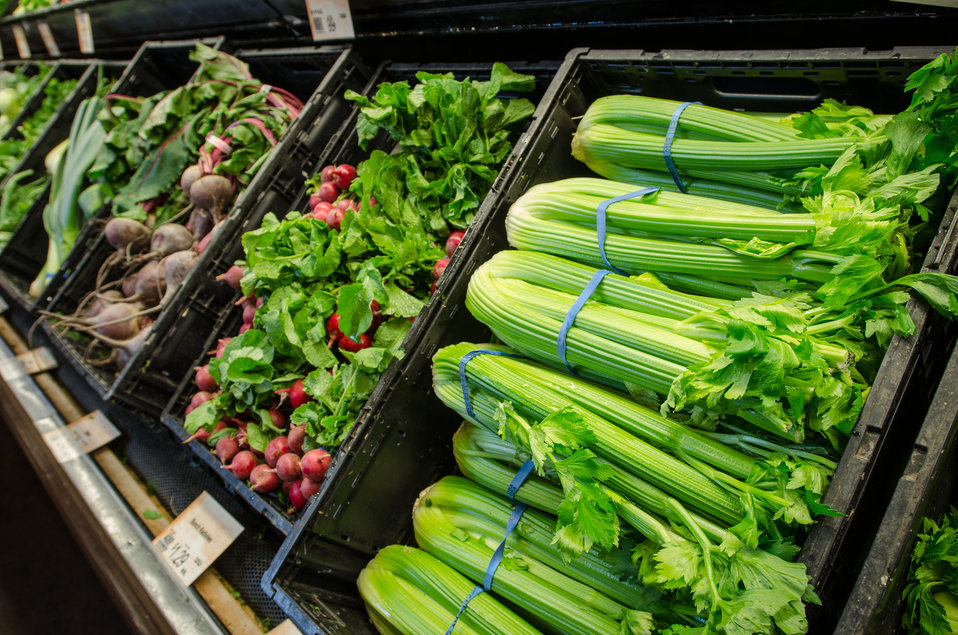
Leafy green produce at a grocery store in Fairfax, Virginia, on March 3, 2011.